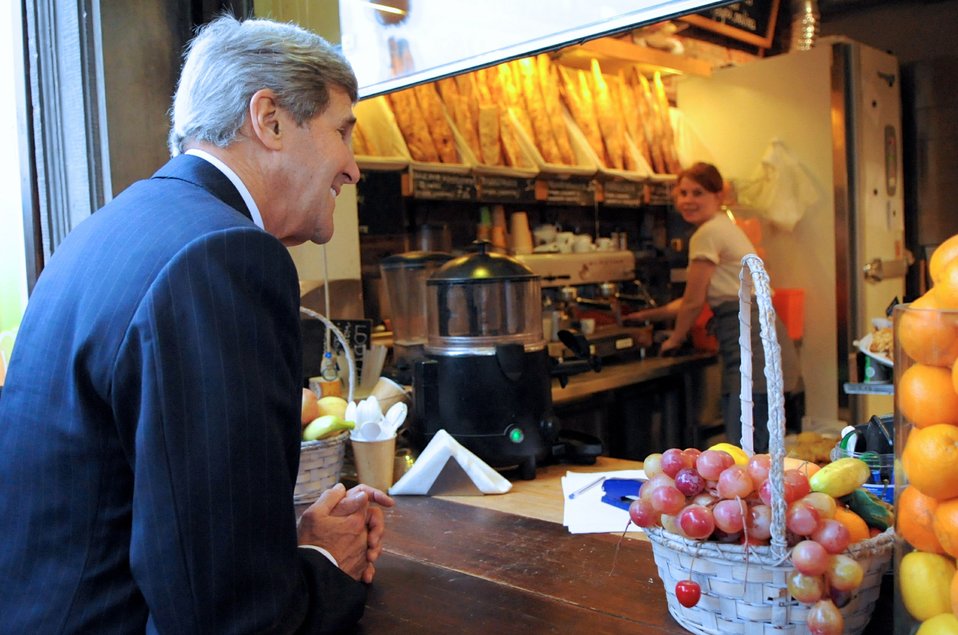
Secretary Kerry Visits a Warsaw Bakery

U.S. Secretary of State John Kerry greets a bakery worker before ordering a baguette during a walk through downtown Warsaw, Poland, on November 5, 2013.